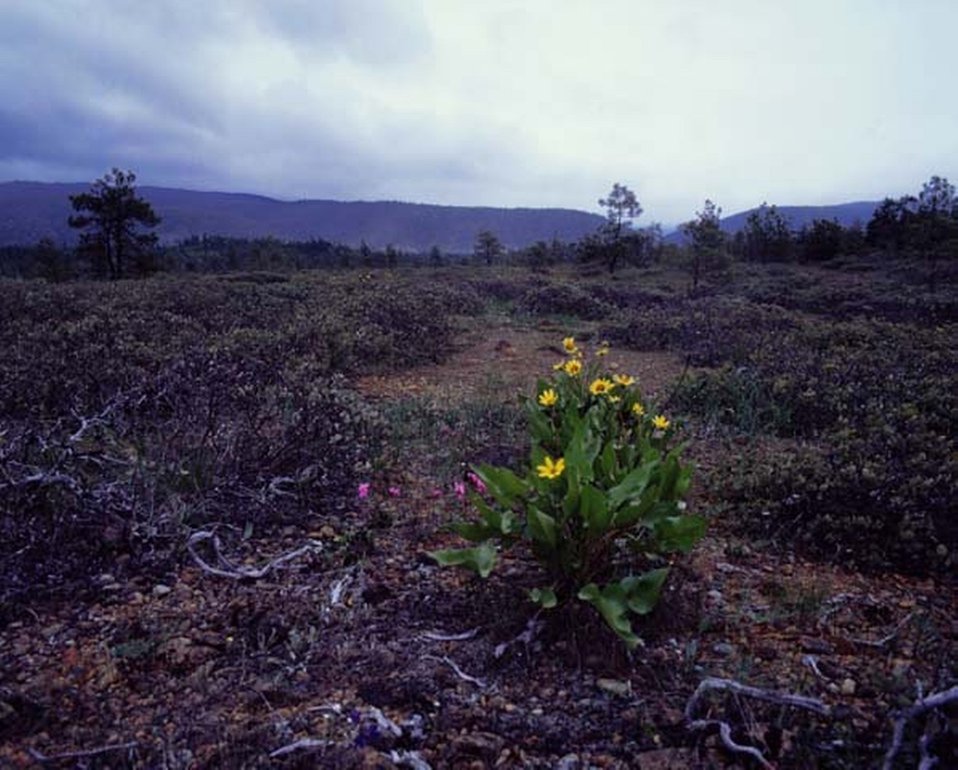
View of Rough & Ready Wildlife Viewing Area and Sunray wildflower (Enceliopsis nudicaulis).